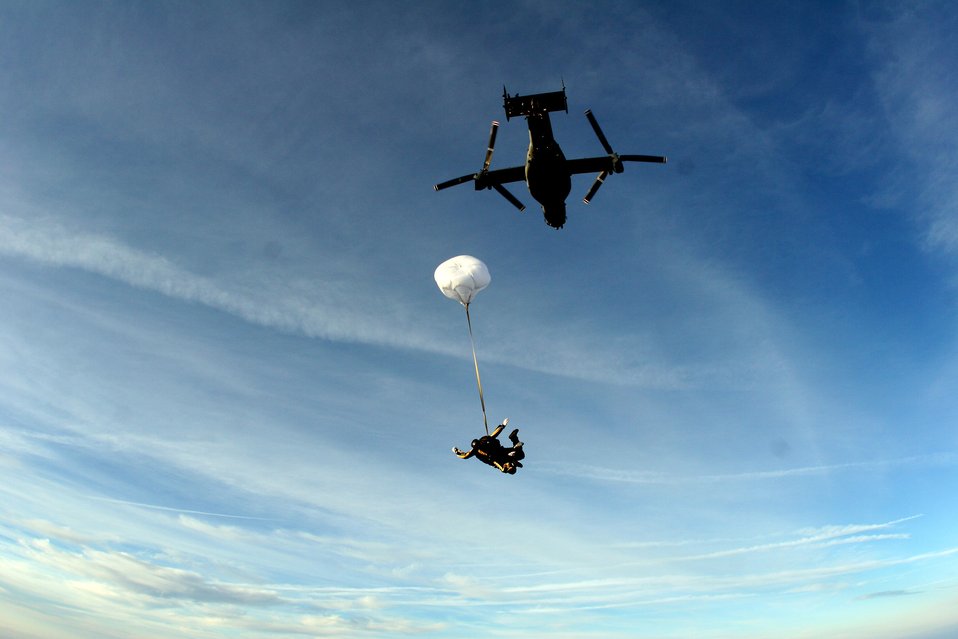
AFSOC helps USSOCOM celebrate 20 years

Tandem jumpers from the U.S. Army Golden Knights parachute team freefall below an Air Force Special Operations Command CV-22 Osprey over MacDill Air Force Base, Fla., April 26. The Osprey and aircrew are from the 8th Special Operations Squadron at Hurlburt Field, Fla.